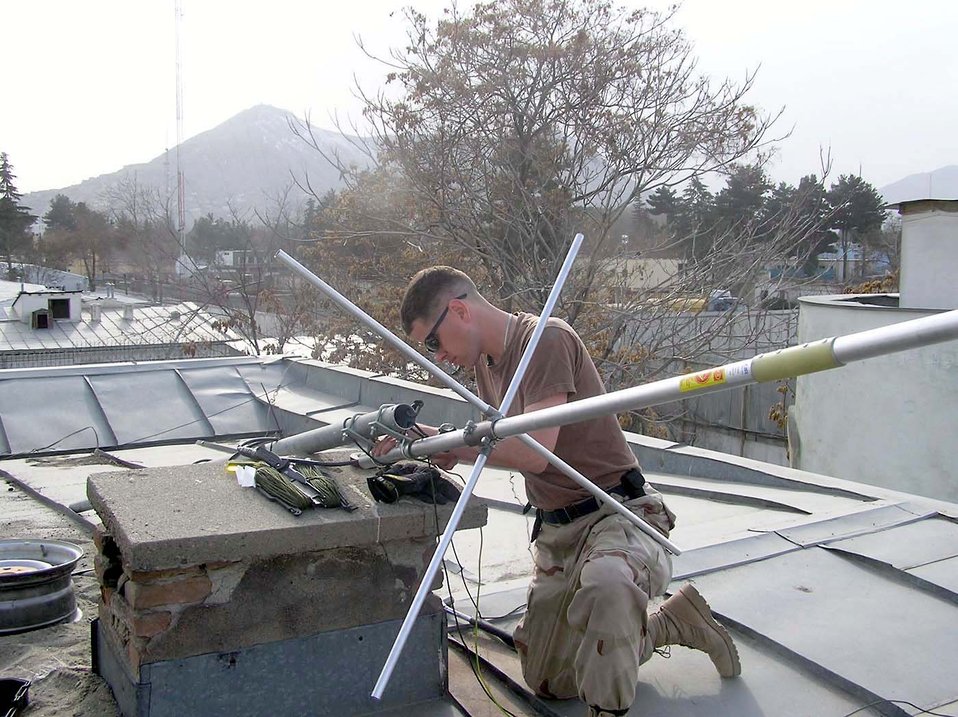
Tuning in

KABUL, Afghanistan -- Staff Sgt. Vincent Bess maintains an antenna on the roof of the Army's Criminal Investigative Division's personal security detail element here. After installing a new repeater system and setting up the antenna, the improved radio communications helped provide better security for convoys rolling in and out of the Afghanistan capital. Sergeant Bess is a ground-radio technician with the 455th Expeditionary Operations Group at Bagram Air Base, Afghanistan.